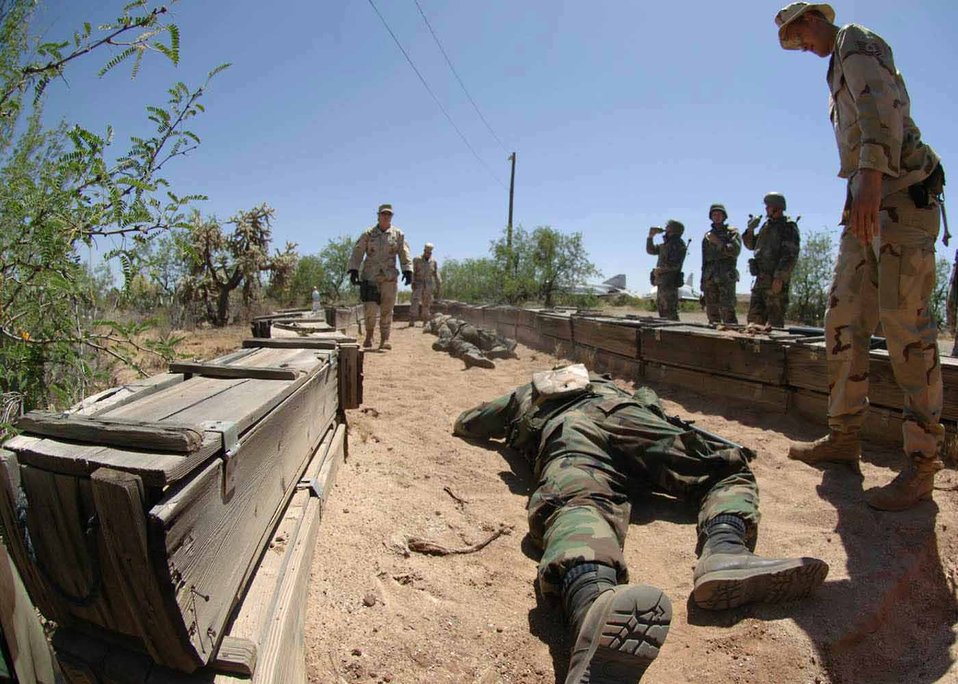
Contingency crawl

DAVIS-MONTHAN AIR FORCE BASE, Ariz. -- Tech. Sgt. Jeremy Huggins instructs Airmen on the low-crawl technique during a deployment training class here. The training prepares Airmen for deployment and day-to-day life during contingency. Sergeant Huggins is assigned to the 355th Civil Engineer Squadron.